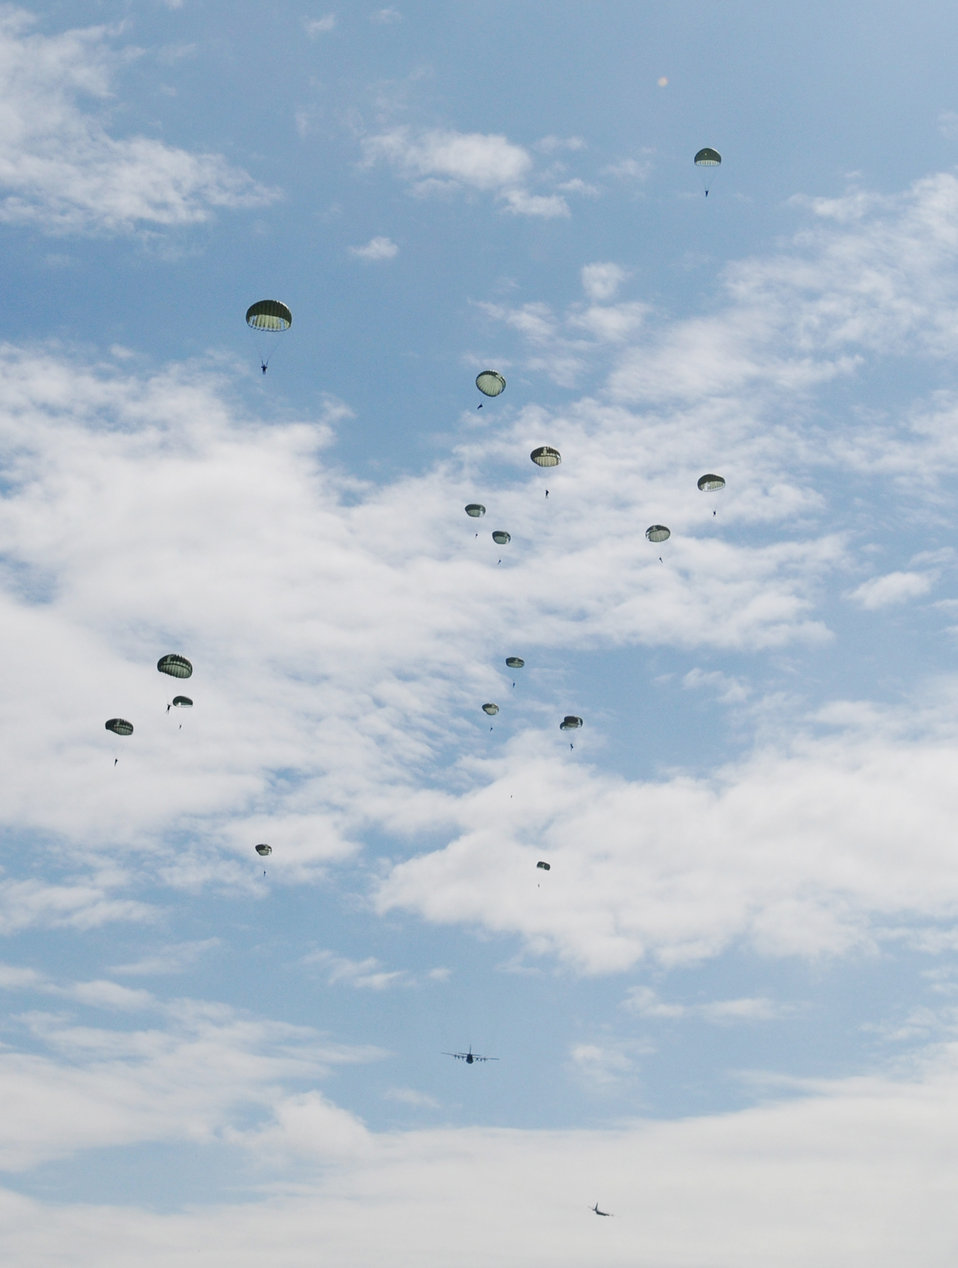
5 NATO countries take part in jump week

U.S. forces along with German, Italian, Belgium and Dutch army parachute over the Bunker drop zone Aug. 13 in southwestern Germany. U.S. Soldiers and Airmen performed a combined airborne drop with four other NATO countries.